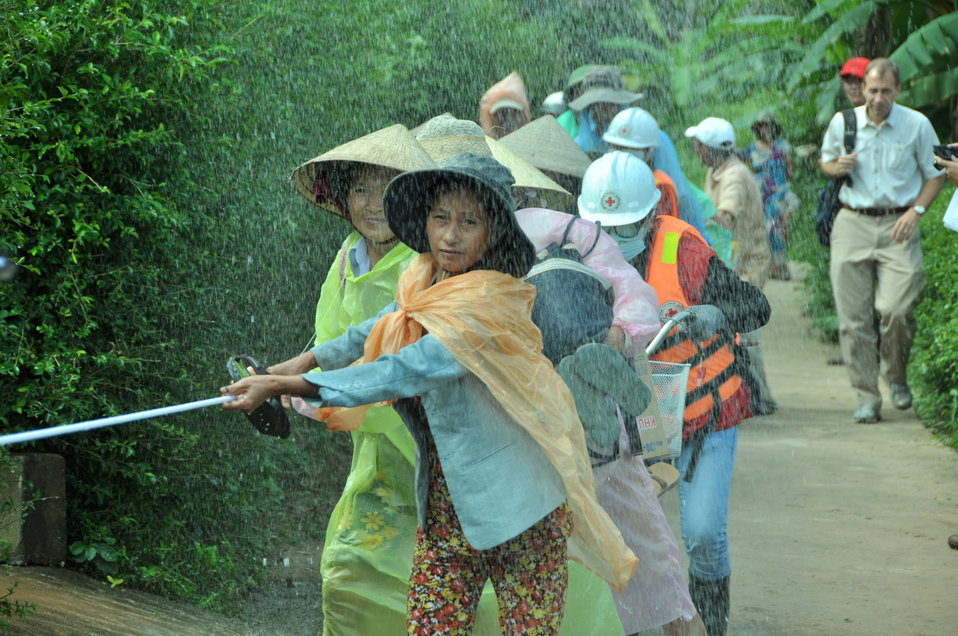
USAID, Red Cross Support Disaster Response Drill in Duy Hoa Commune, Quang Nam Province

Duy Hoa Commune, Quang Nam Province
December 5, 2012